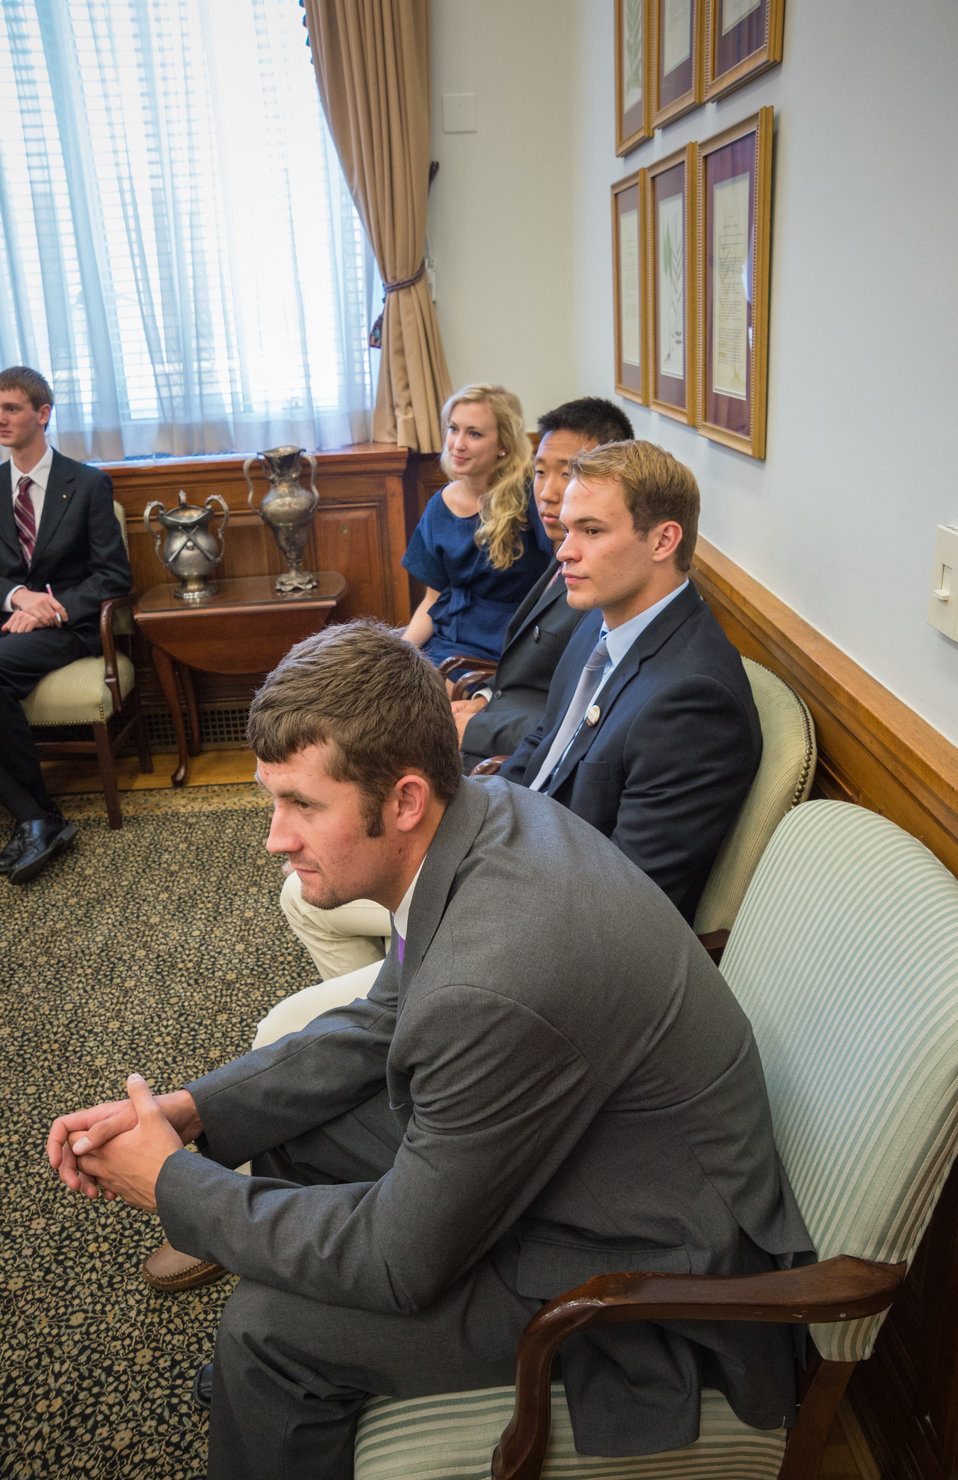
Lindsay Demers, DoWon Kim, Jacob Solawetz and Quinn Inwards, Wallace-Carver Fellowship Fellows listen to Agriculture Deputy Secretary Krysta Harden during the Wallace-Carver Fellowship Leadership Symposium at the United States Department of Agriculture (USDA) in Washington, DC, on Tue. Jun. 17, 2014. Secretary Harden discussed the importance of the fellows being the next generation of American scientific and humanitarian leaders. The USDA and the World Food Prize Foundation partnered to create the Wallace-Carver Fellowship.